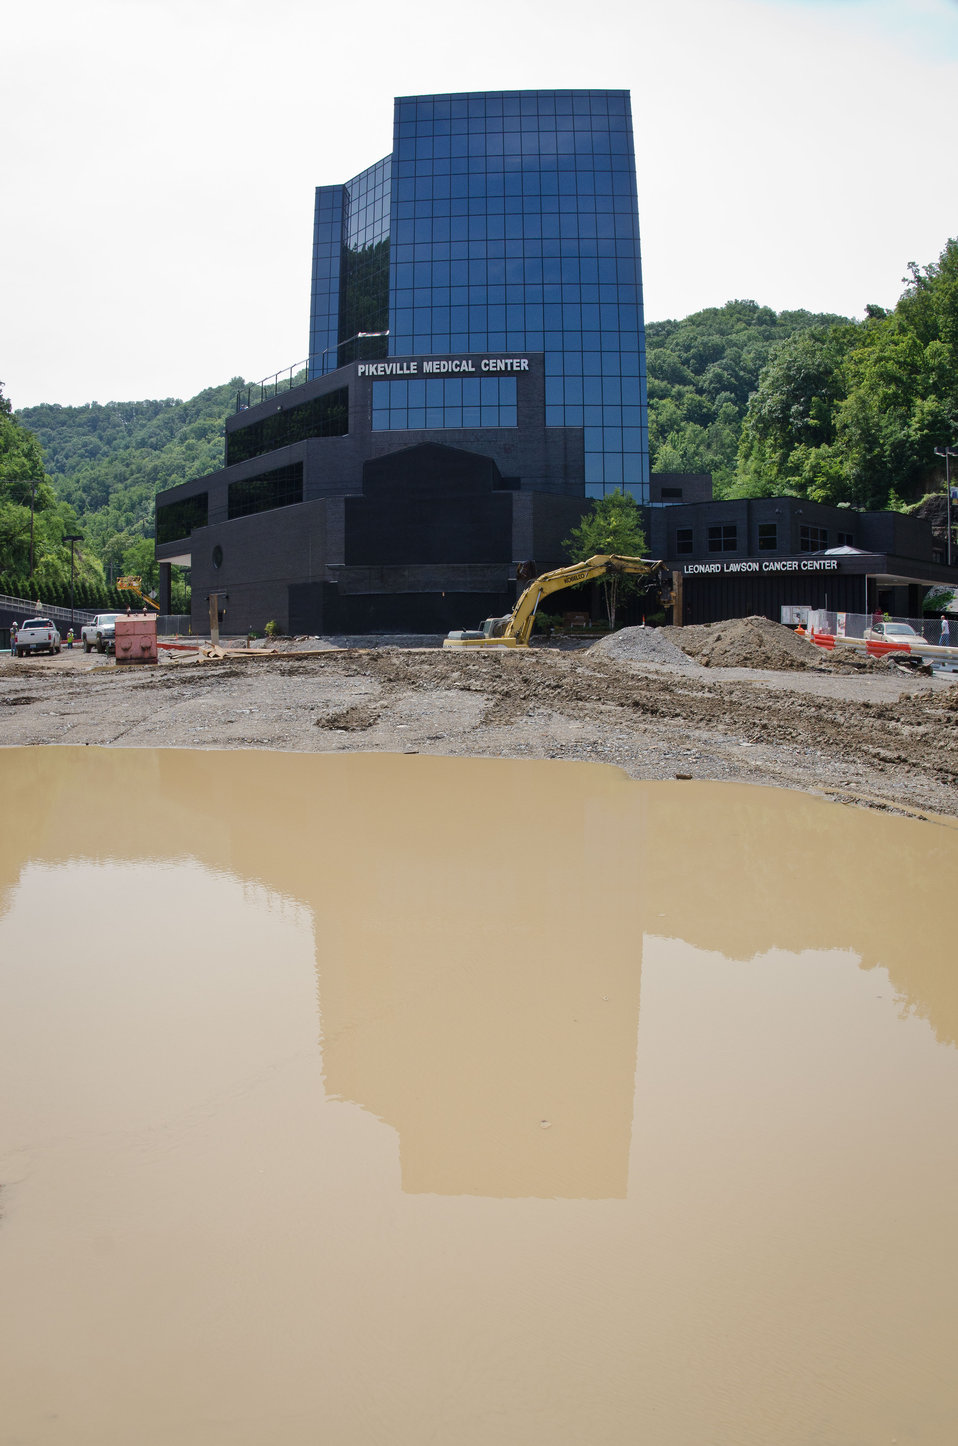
Above ground construction phase of Pikeville Medical Center (PMC) expansion project, on Tuesday, July 12, 2011, in Pikeville, KY. After months of infrastructure construction and rain delays, one of Kentucky’s largest American Recovery and Reinvestment Act (ARRA) projects is under way. The $44.6 million Community Facilities Loan will finance construction of a new medical office building and parking garage.